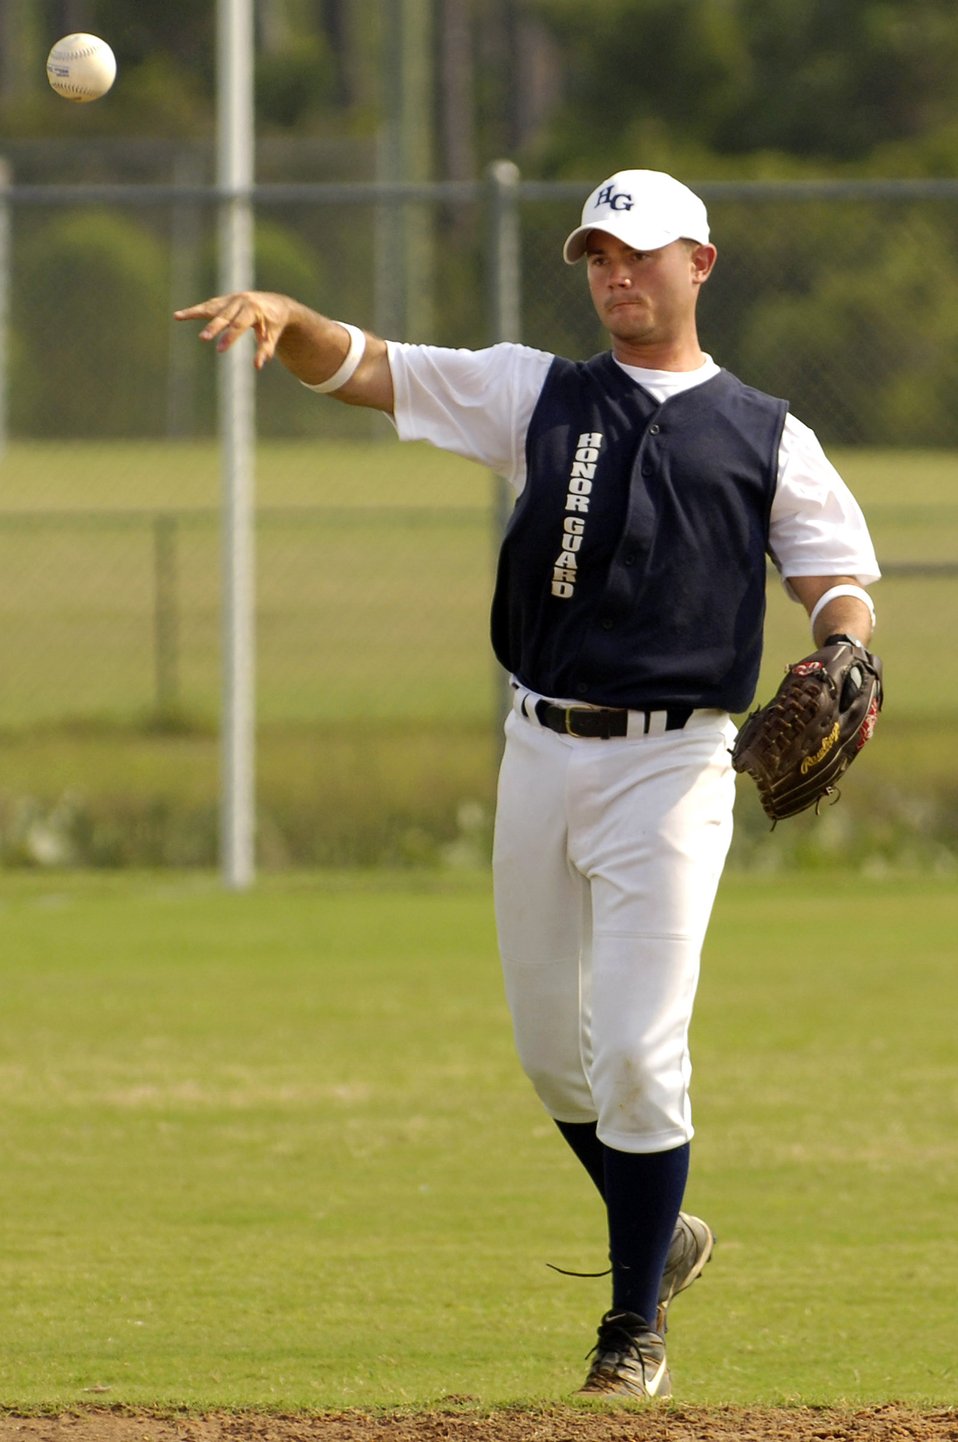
Taking on the world

PANAMA CITY BEACH, Fla. -- Wes Brin, Honor Guard team coach, returns the ball to the pitcher during the 2005 World Military Championship softball tournament held here Aug. 19 to 21.